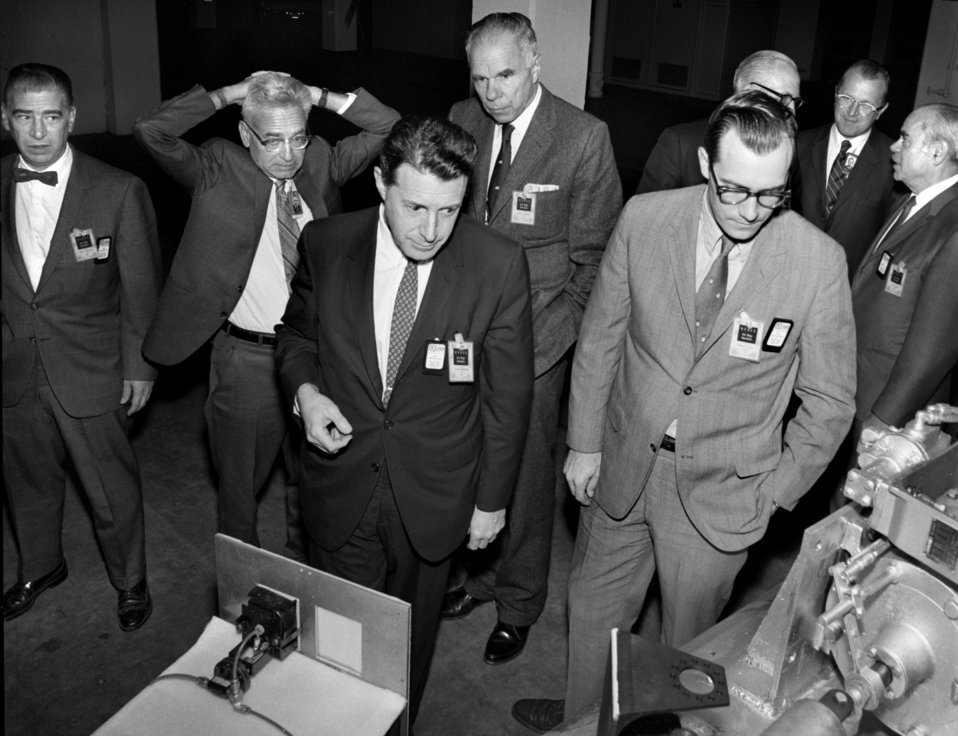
Caspar Weinberger and D.B. Rice visit to Oak Ridge with Glenn Seaborg 1970

70-337a DOE photo Frank Hoffman 10-23-1970 L to R John Abbadessa , Alvin Weinberg, Caspar Weinberger, Glenn Seaborg, Donald Rice, ID pending, Sam Saphire Oak Ridge Tennessee